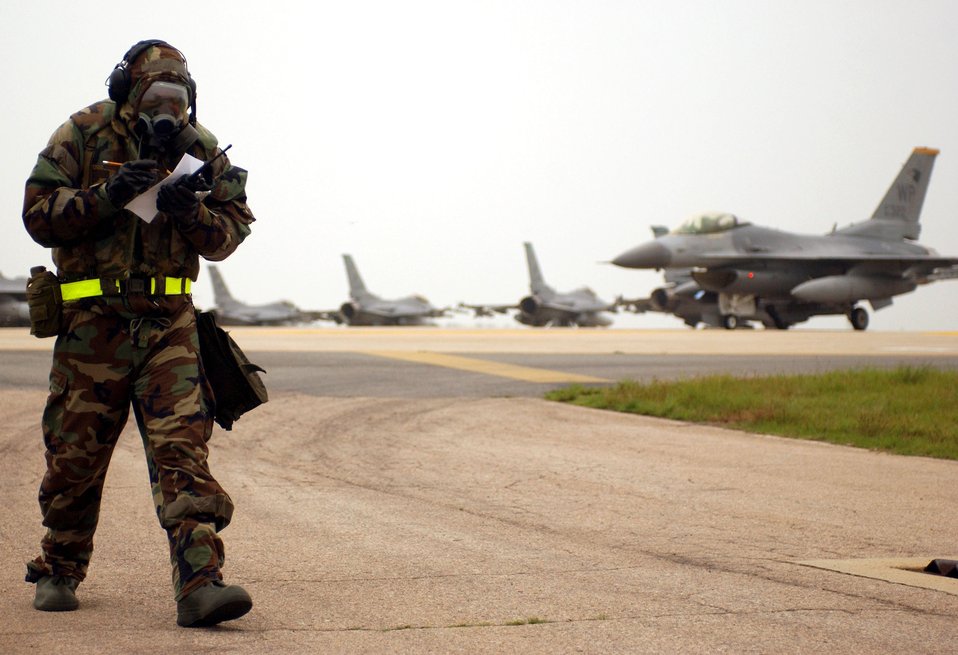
Maintaining credible deterrence

Staff Sgt. Corey Jones reviews his checklist during the Peninsula-Wide Combat Employment Response Exercise July 26 at Kunsan Air Base, South Korea. Members of the 8th Fighter Wing are conducting the quarterly exercise to test it's ability to maintain a credible deterrence on the Korean peninsula. Sergeant Jones is assigned to the 8th Maintenance Squadron.